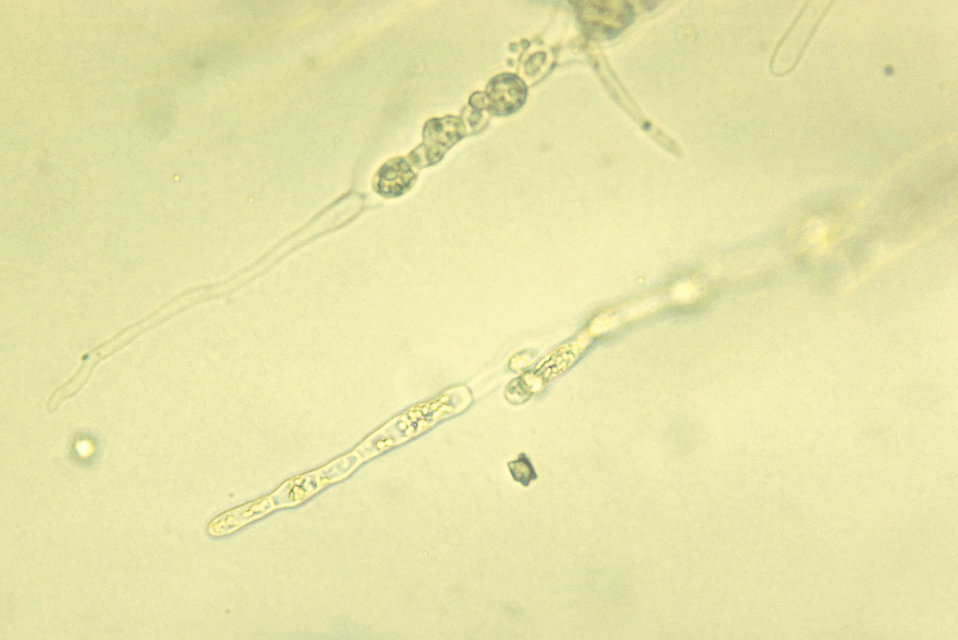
Note the resemblance between the algae Prototheca filamenta to a fungal organism due to its mycelia-like filaments.